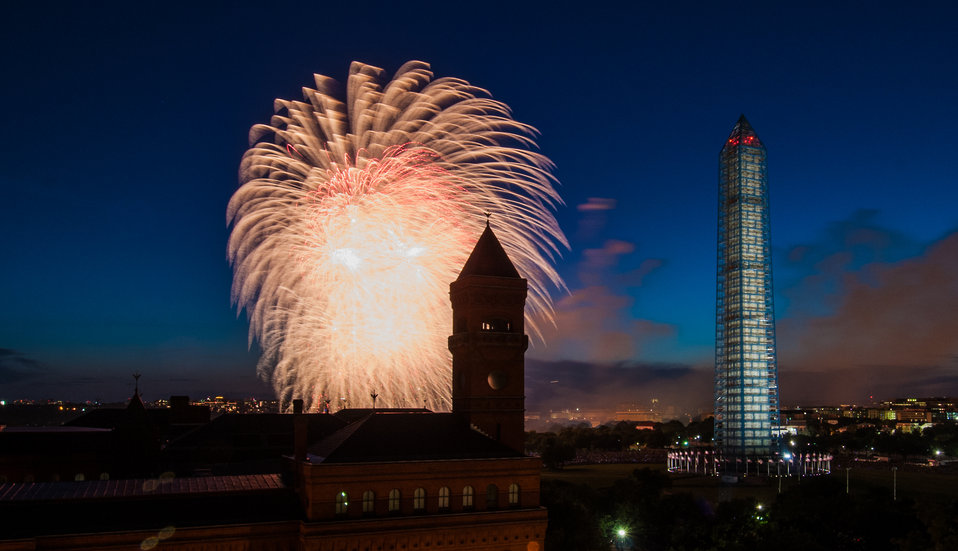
4th of July fireworks as seen from the U.S. Department of Agriculture (USDA) headquarters building, with the USDA Forest Service Yates Building in the foreground, left, and the Washington Monument in Washington, D.C., on July 4, 2013.